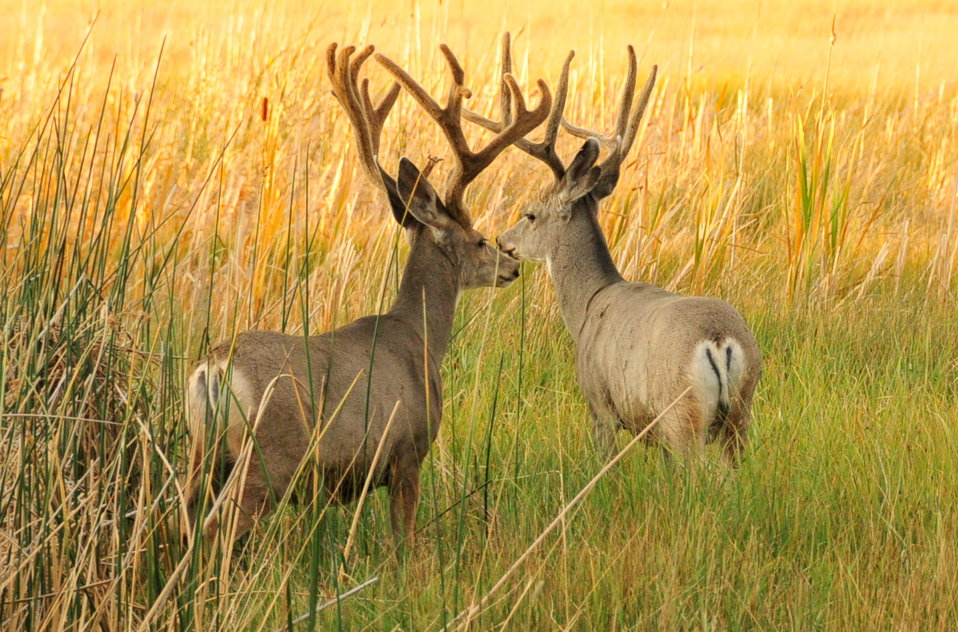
Mule Deer bucks in velvet Seedskadee National Wildlife Refuge 02

Two mature mule deer bucks in late summer on Seedskadee NWR.